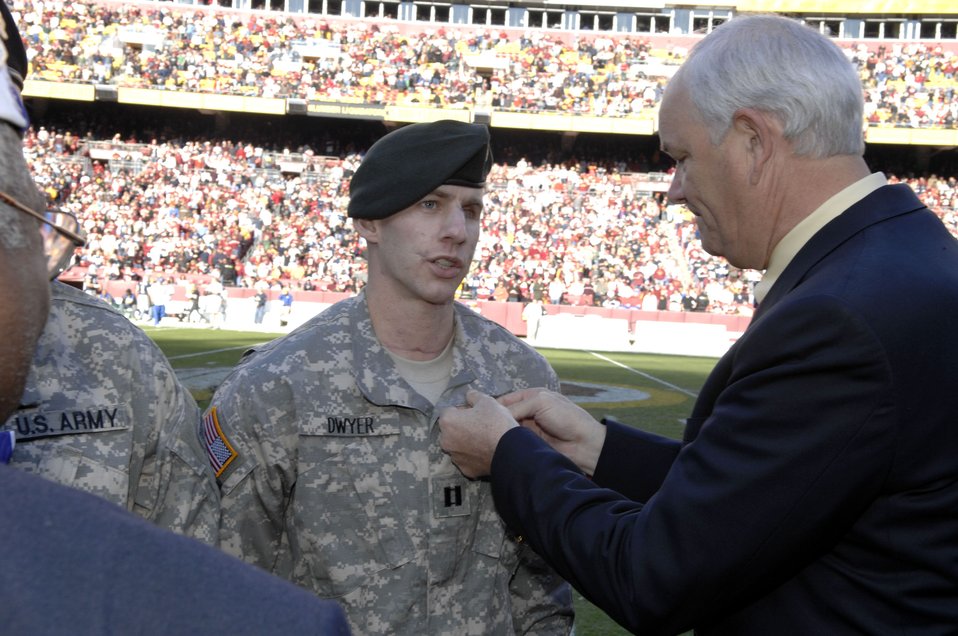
NFL hosts Air Force Appreciation Day

Secretary of the Air Force Michael W. Wynne presents a Purple Heart to Army Capt. Ken Dwyer at Air Force Appreciation Day at FedEx Field in Landover, Md., on Nov. 5. The presentation took place prior to the National Football League game between the Washington Redskins and the Dallas Cowboys. Captain Dwyer, of Fort Walton Beach, Fla., served in Afghanistan.